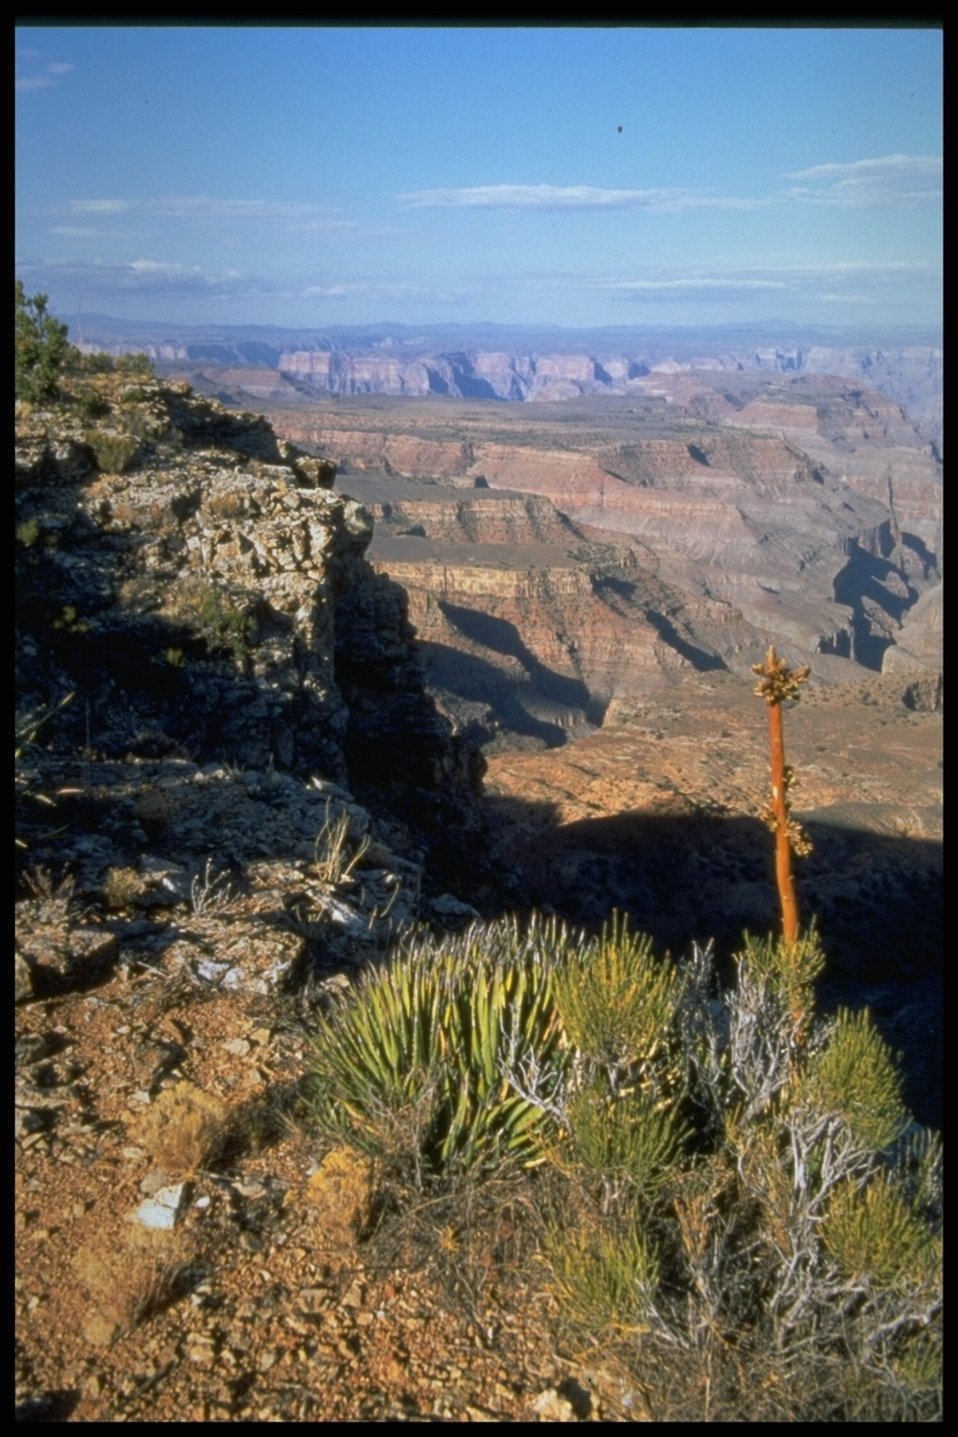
A afternoon shot of the canyon at the Parashant National Monument.